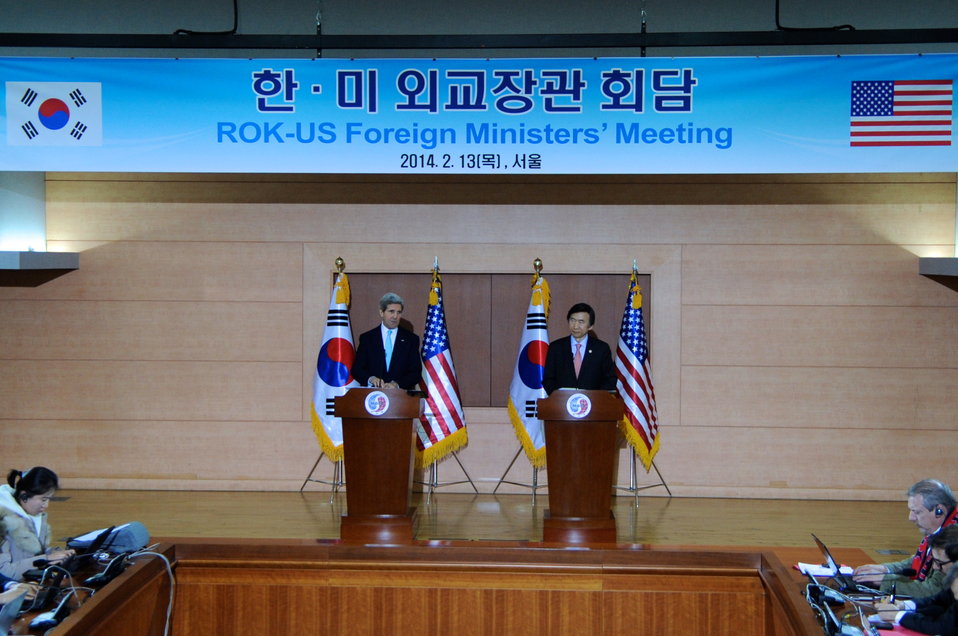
Secretary Kerry and South Korean Foreign Minister Yun Hold News Conference

U.S. Secretary of State John Kerry and South Korean Foreign Minister Yun Byung-se hold a news conference after a series of meetings in Seoul, South Korea on February 13, 2014.